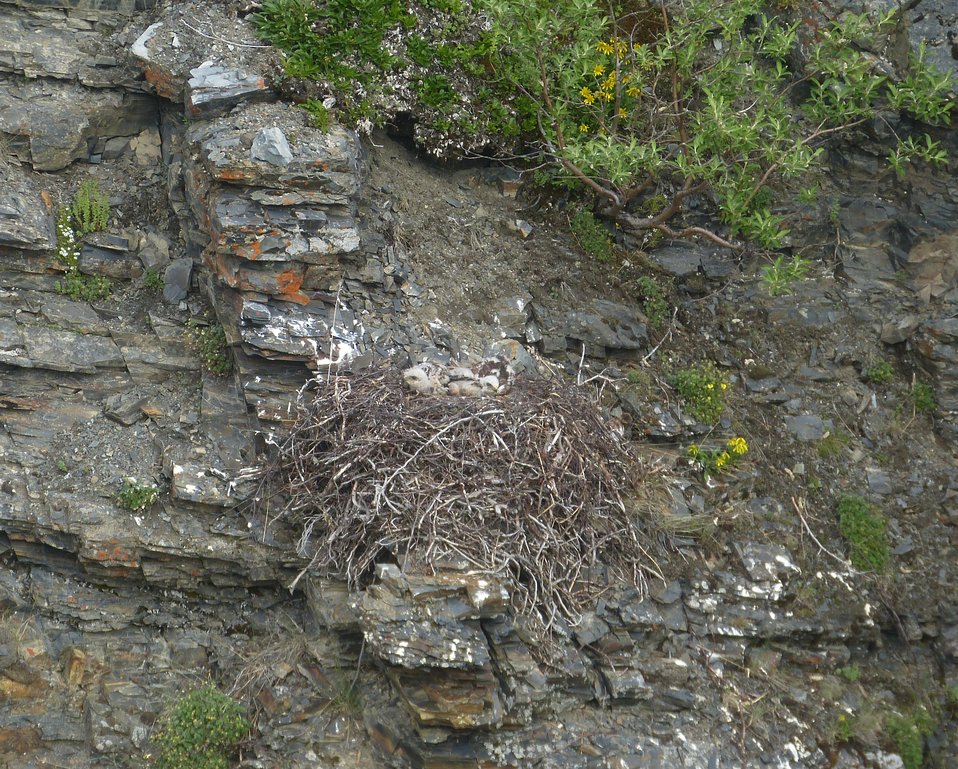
Rough-legged hawk nest, Kilbuck Mountains, Yukon Delta National Wildlife Refuge

Photo by: Kristine Sowl,
USFWS, Yukon Delta NWR,
July 10, 2013